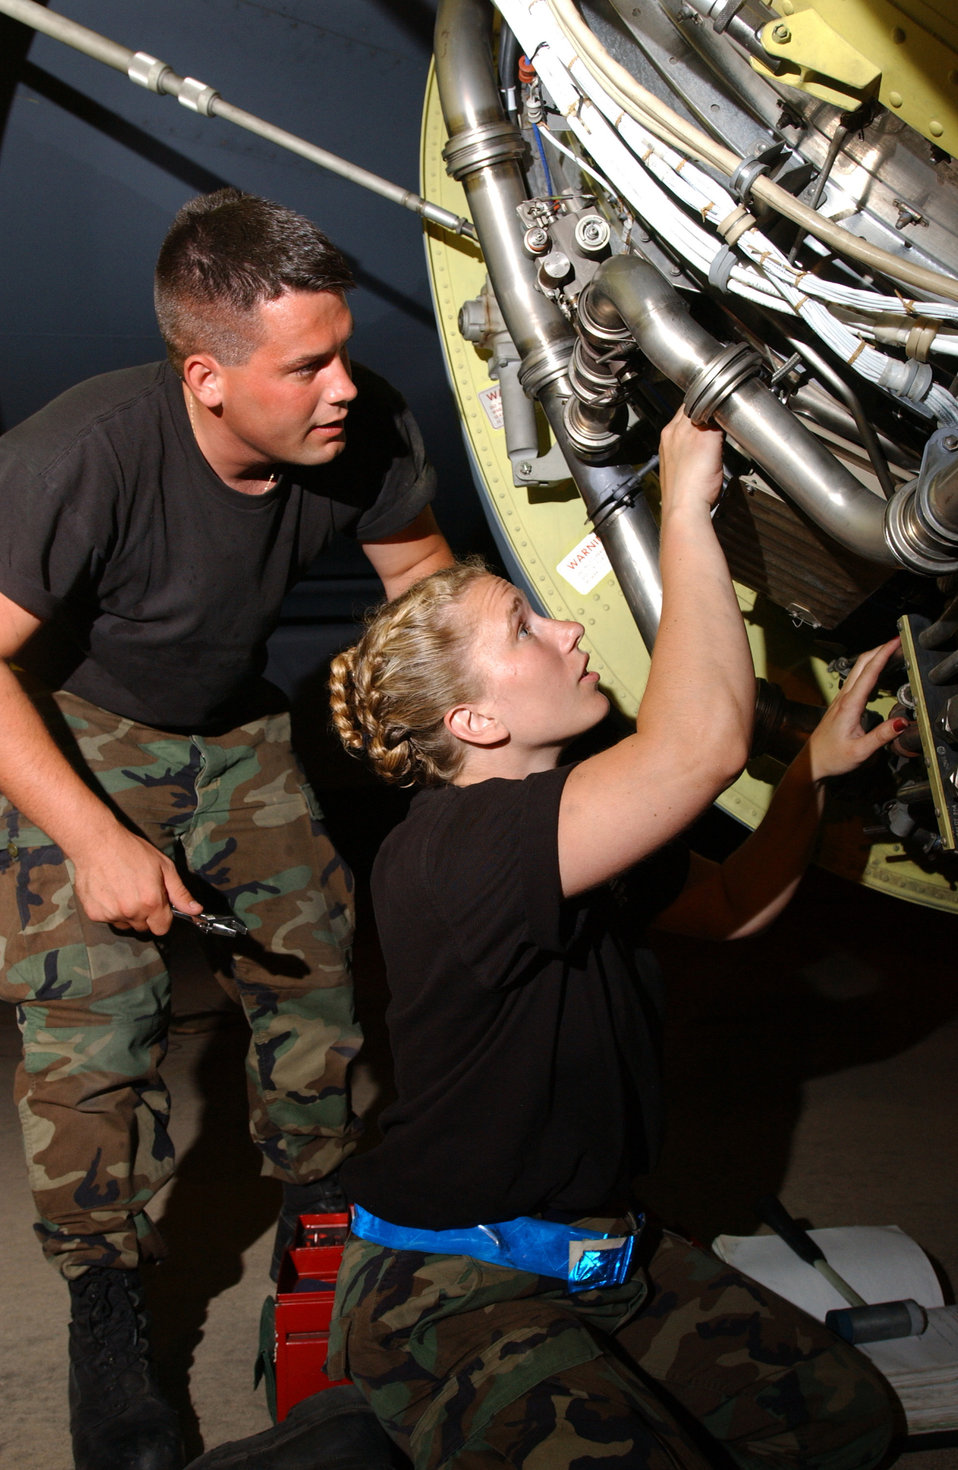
Power control

ROYAL AIR FORCE MILDENHALL, England -- Staff Sgts. Robert Spain (left) and Jessica King change the power management control on a KC-135 Stratotanker here July 13. Sergeants Spain and King are crew chiefs with 100th Aircraft Maintenance Squadron.